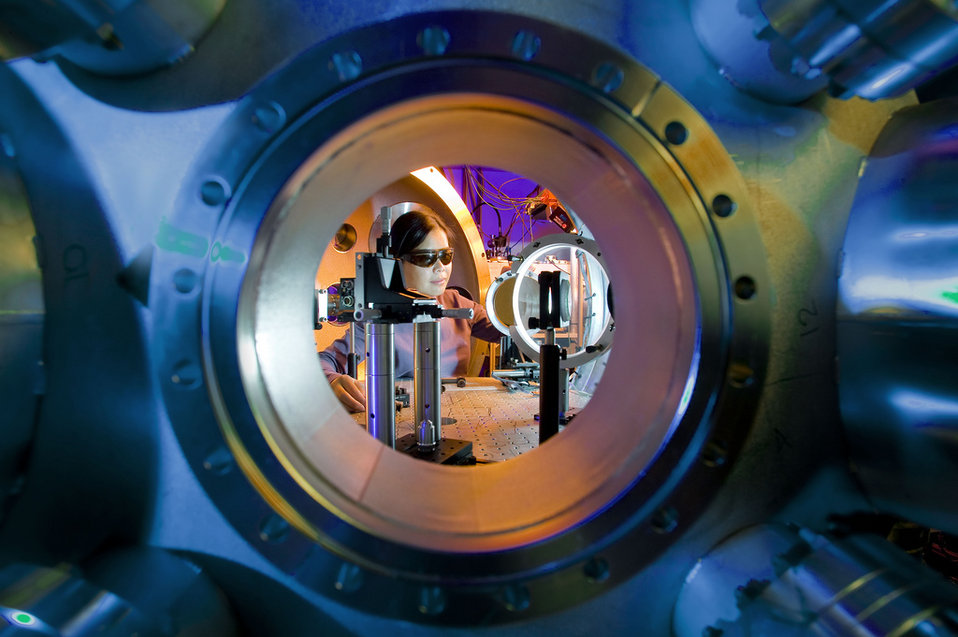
Take a gold sample the size of the head of a push pin, shoot a laser through it and suddenly more than 100 billion particles of anti-matter appear at Lawrence Livermore National Laboratory.

The anti-matter, also known as positrons, shoots out of the target in a cone-shaped plasma jet. The new ability to create a large number of positrons in small laboratory opens the door to several fresh avenues of anti-matter research, including an understanding of the physics underlying various astrophysical phenomena such as black holes and gamma ray bursts. Anti-matter research also could reveal why more than anti-matter survived the Big Bang at the start of the universe.